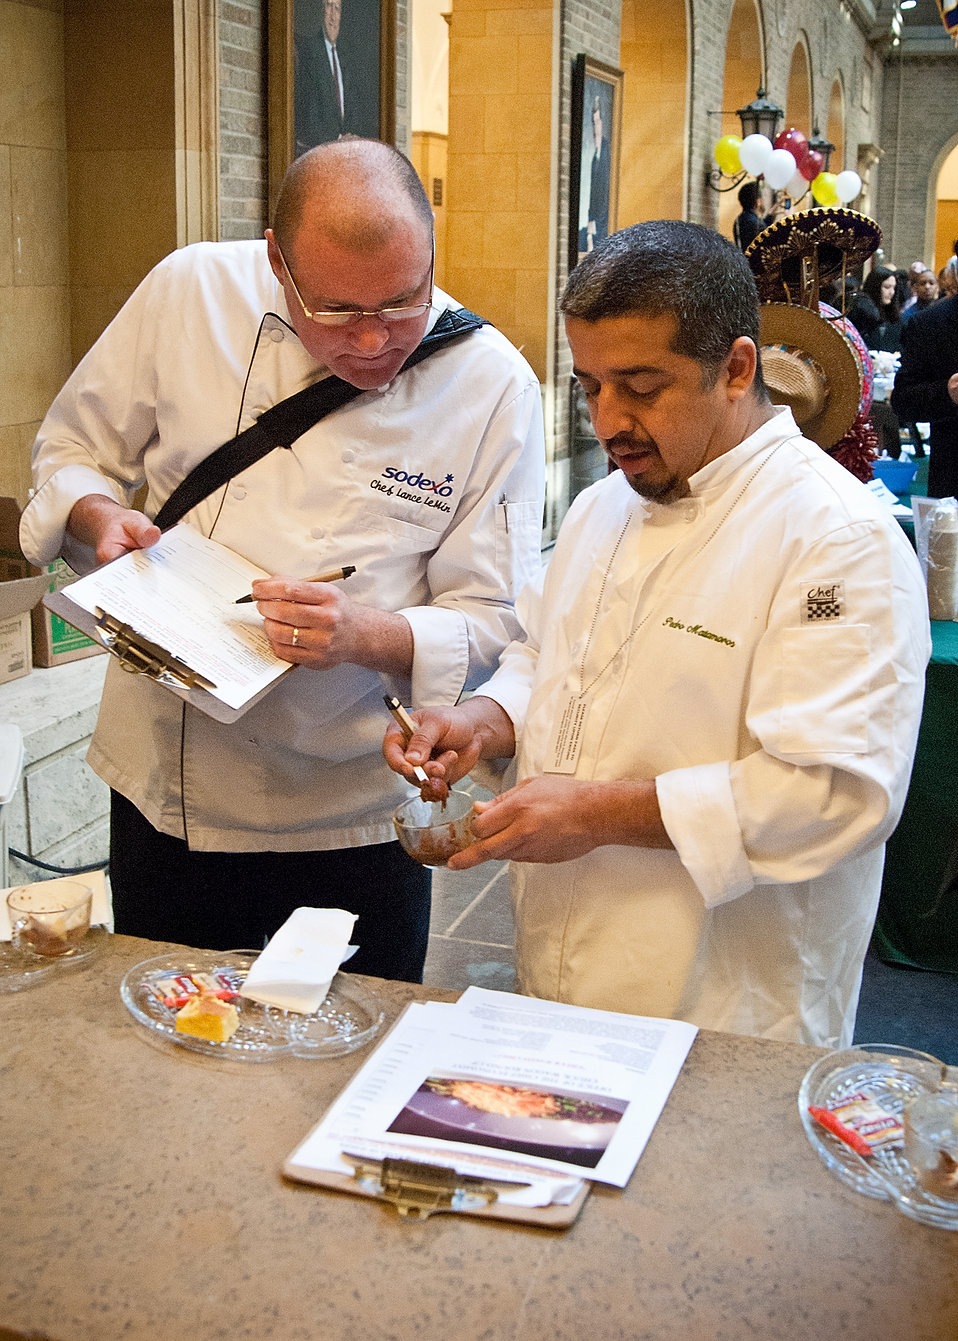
Corporate Executive Chef Lance Lemin (left) and Chef Pedro Matamoros (right), 8407 Kitchen Bar judge chili recipes prepared by U. S. Department of Agriculture employees for the Second Annual Chili Challenge Contest to celebrate Hispanic Heritage Month at USDA in Washington, DC, Thursday, October 6, 2011. Employee chef volunteers along with Celebrity chefs used chili’s in delicious recipes to celebrate Hispanic cuisine. USDA’s traditional Chili Challenge trophy will be awarded to this year’s best-tasting chili. Other judges for the challenge along with Chef Lemin and Chef Matamoros were Chef Toni Tipton-Martin, Ed Avalos, Undersecretary, Marketing and Regulatory Programs and Krista Hardin, Chief of Staff.